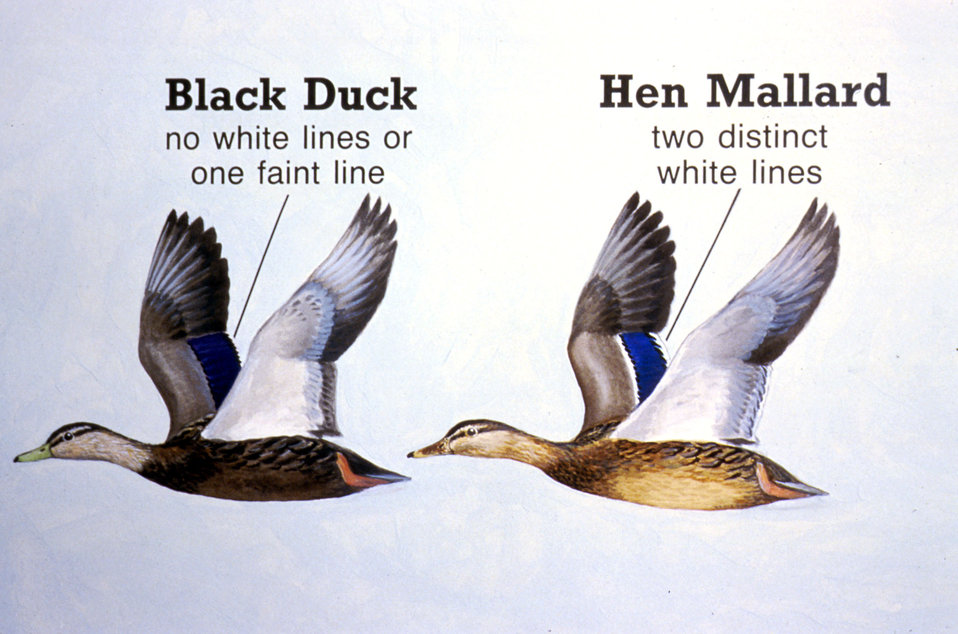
Black duck and hen mallard characteristics comparison diagram